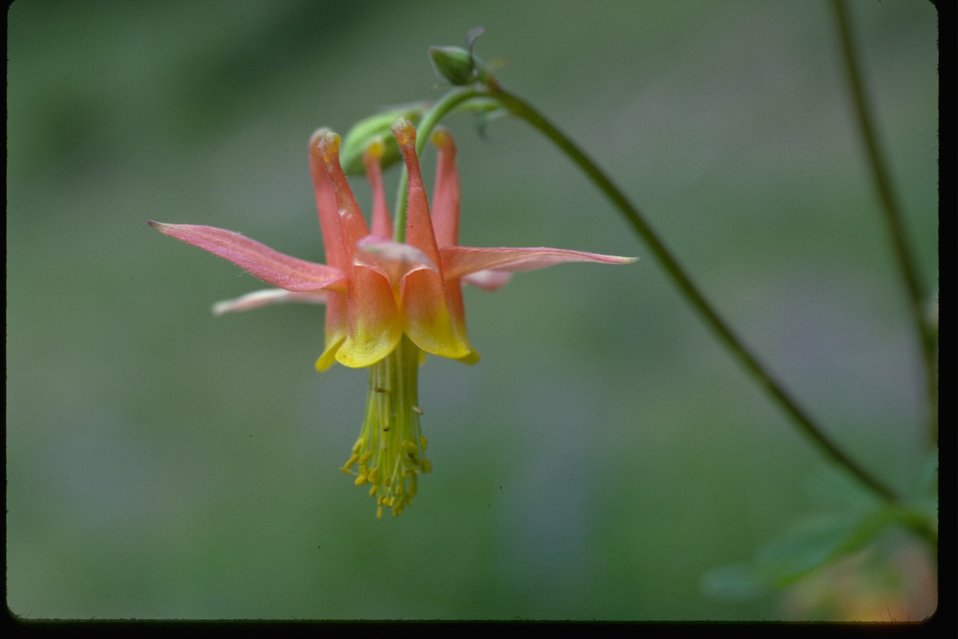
Closeup shot of Aquilegia formosa.